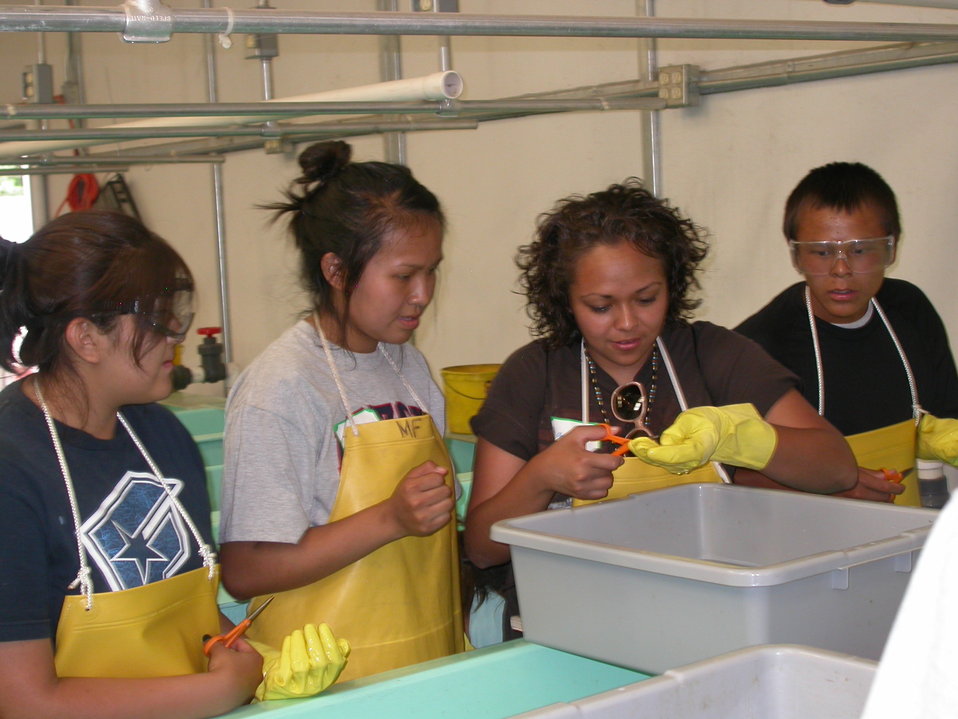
Working in a Fishery